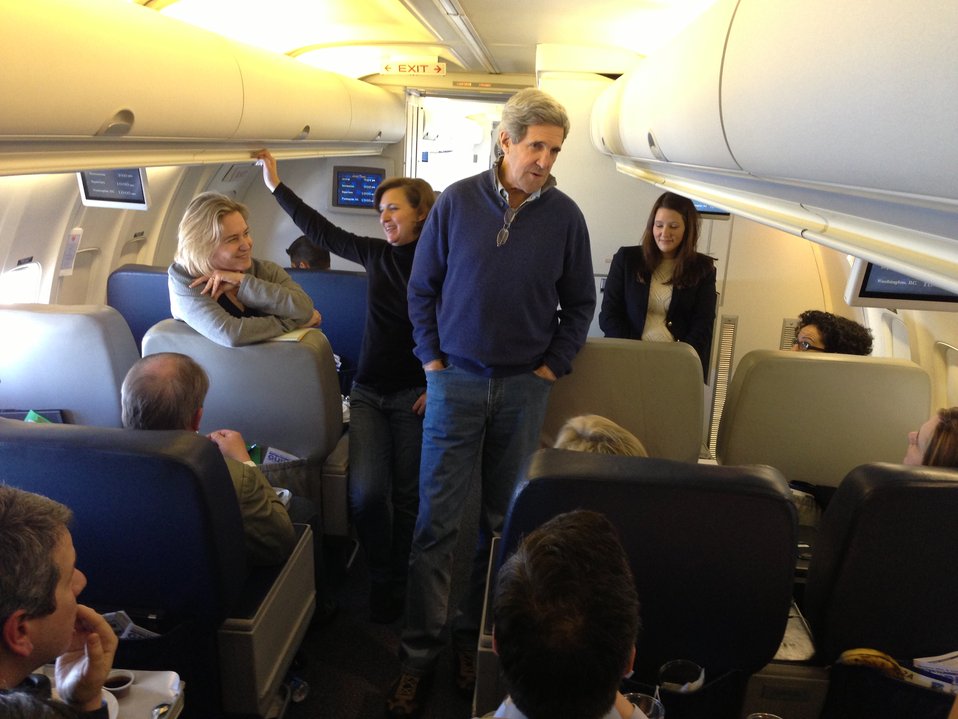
Secretary Kerry Speaks With Press Corps En Route London, United Kingdom

U.S. Secretary of State John Kerry speaks with the traveling press corps aboard U.S. Air Force Boeing 757 en route to London, the United Kingdom, February 24, 2013.